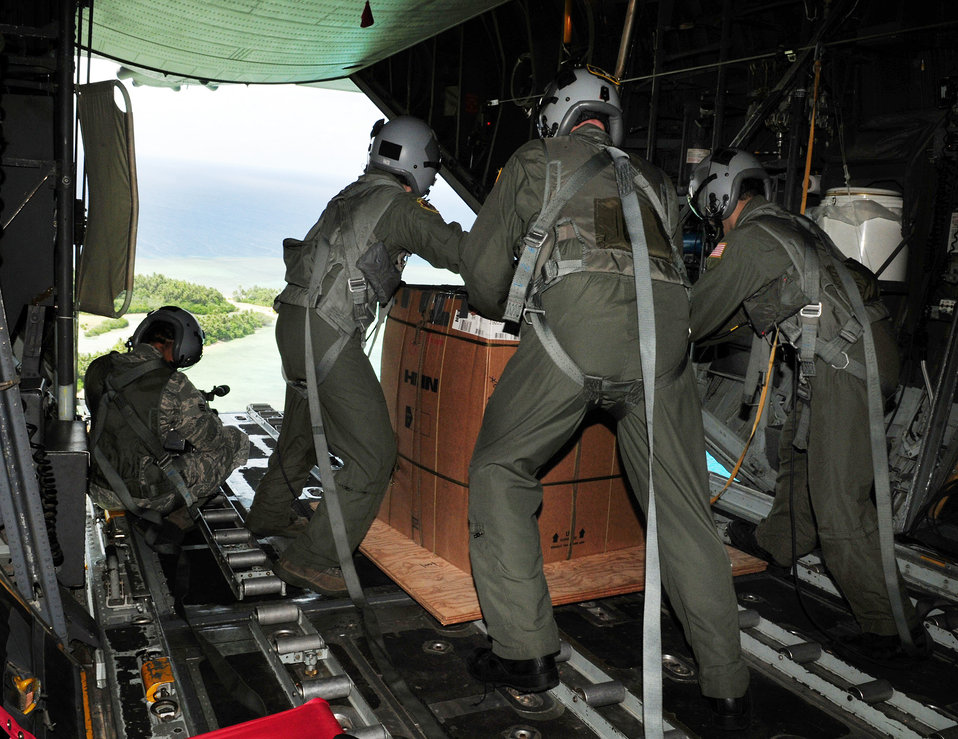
Airmen drop donated goods to islanders

Airman from the 36th Airlift Squadron at Yokota Air Base, Japan, prepare to airdrop a package over a remote island near Chuuk Dec. 17, 2009. Operation Christmas Drop is a non-profit organization sponsored by volunteers from Andersen Air Force Base and the local Guam community. Each year, the two join forces to aid more than 30,000 islanders in Chuuk, Palau, Yap, Marshall Islands and the Commonwealth of the Northern Mariana Islands.